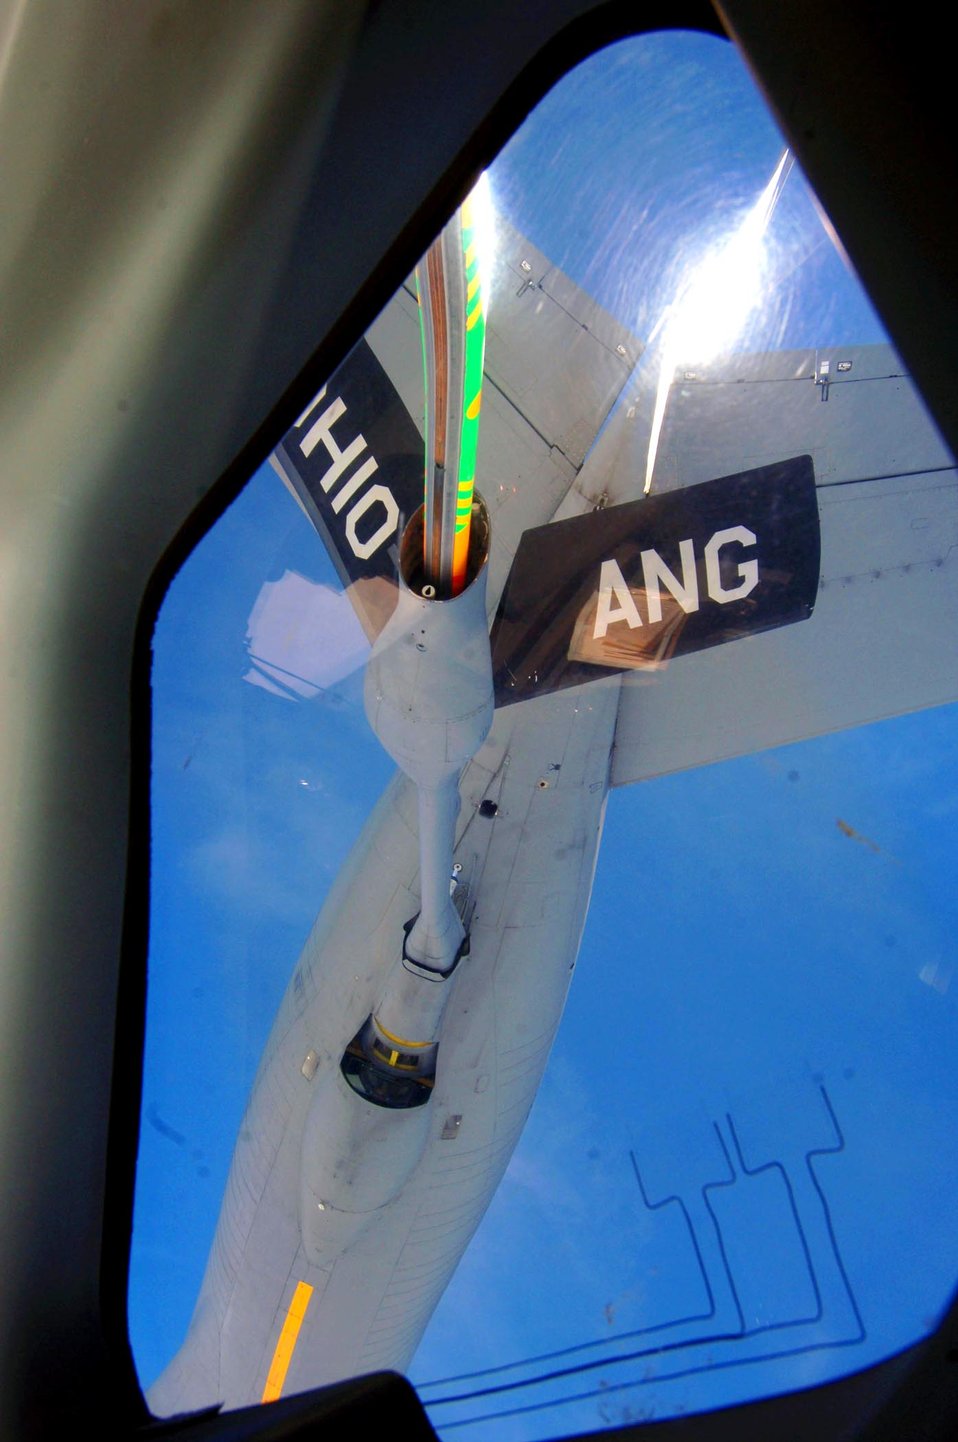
Get ready to connect

From the receiver's viewpoint, a C-17 Globemaster III gets ready to receive fuel from a KC-135 Stratotanker's colorful boom over the Pacific Ocean July 23, 2010. The aircraft were participating in a Rim of the Pacific exercise.